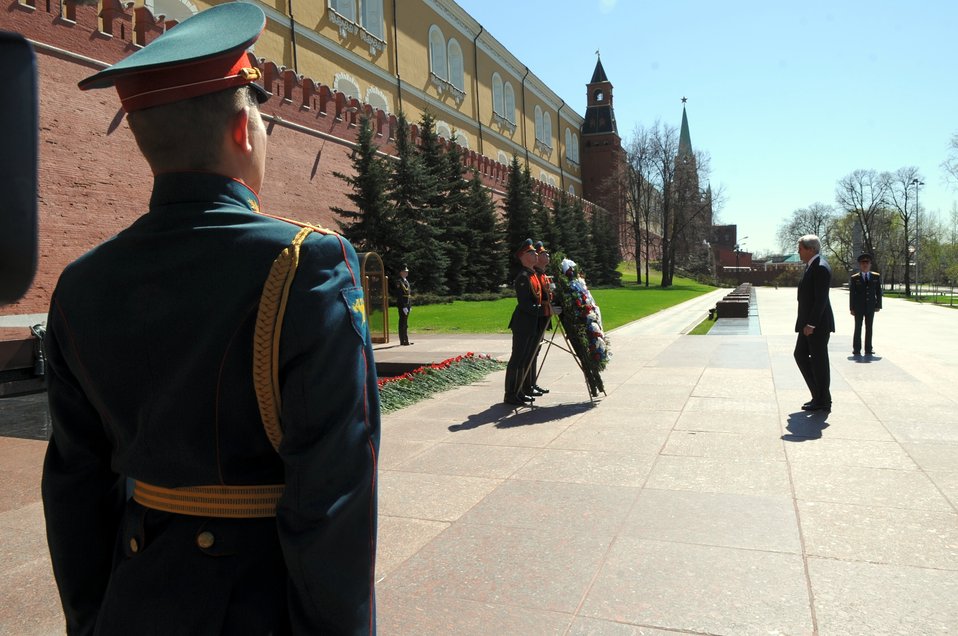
Secretary Kerry Lays a Wreath at the Kremlin

U.S. Secretary of State John Kerry lays a wreath at the Tomb of the Unknown Soldier at the Kremlin in Moscow, Russia, on May 7, 2013.